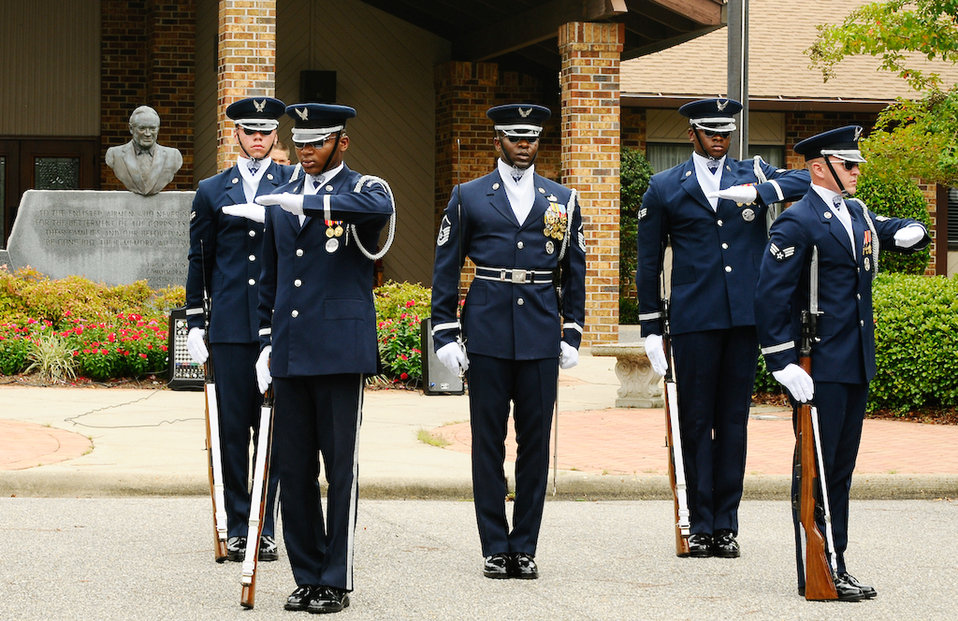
Precision and honor

The U.S. Air Force Honor Guard Drill Team ends a performance Aug. 18 at the Bob Hope Village in Shalimar, Fla. Also known as the Air Force Enlisted Village, it is home to more than 200 Air Force widows. This is one of the many stops that the Drill Team will make during their summer tour in Florida.